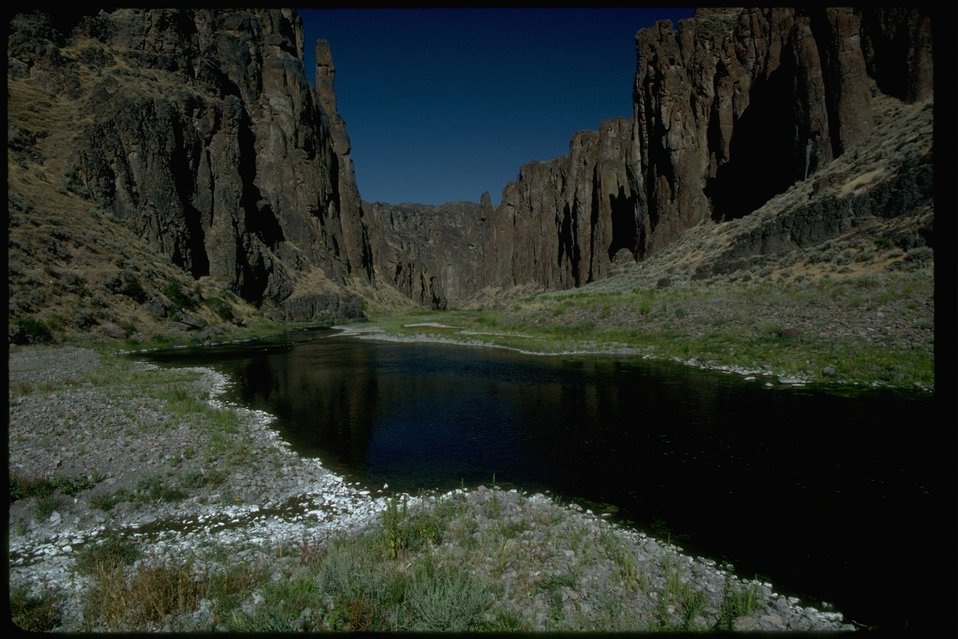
The Owyheee River in the Upper West Little Owyhee Wilderness Study Area. OR 3-173